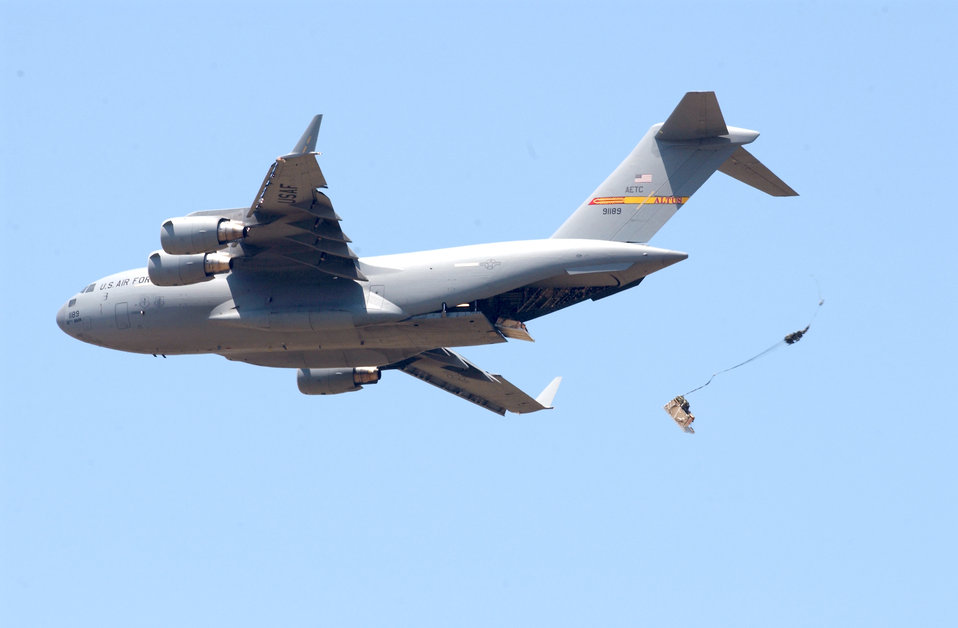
Altus aircrew showcases dual-row airdrop

ALTUS AIR FORCE BASE, Okla. -- Loadmasters release cargo over a drop zone here July 5. The aircrew was showcasing a procedure called the dual-row airdrop.